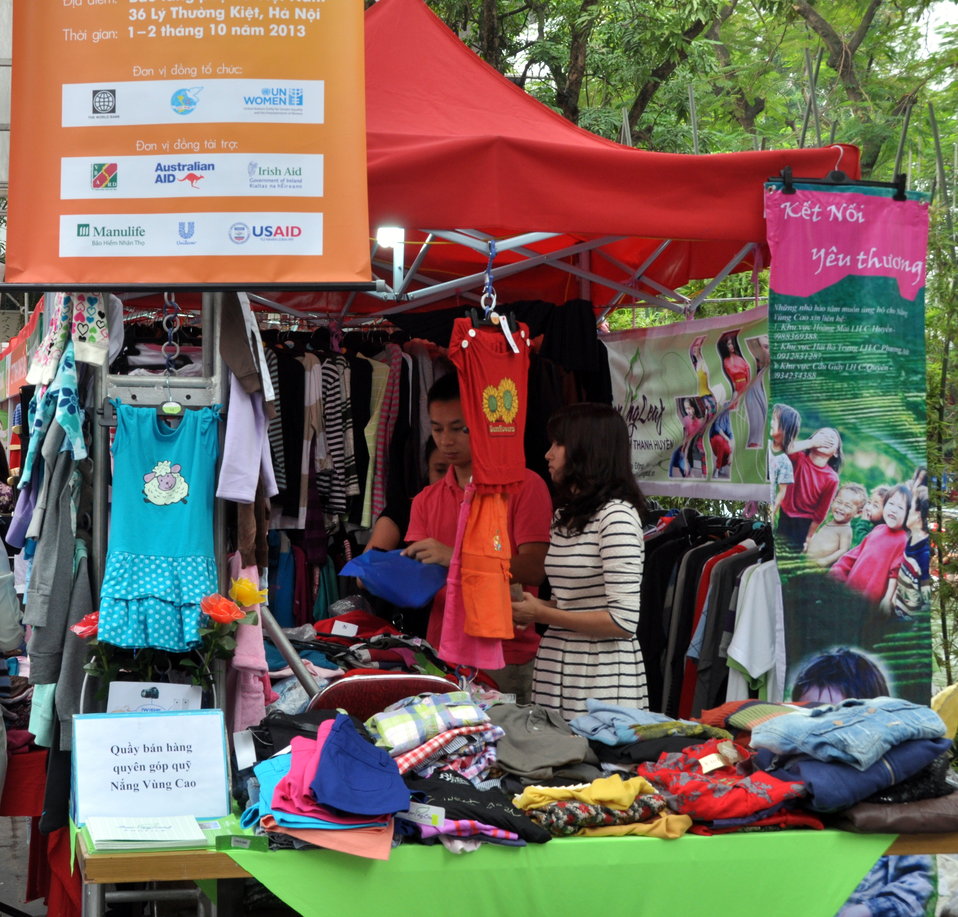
Vietnam Women Innovation Day 2013

Hanoi, October 1, 2013.